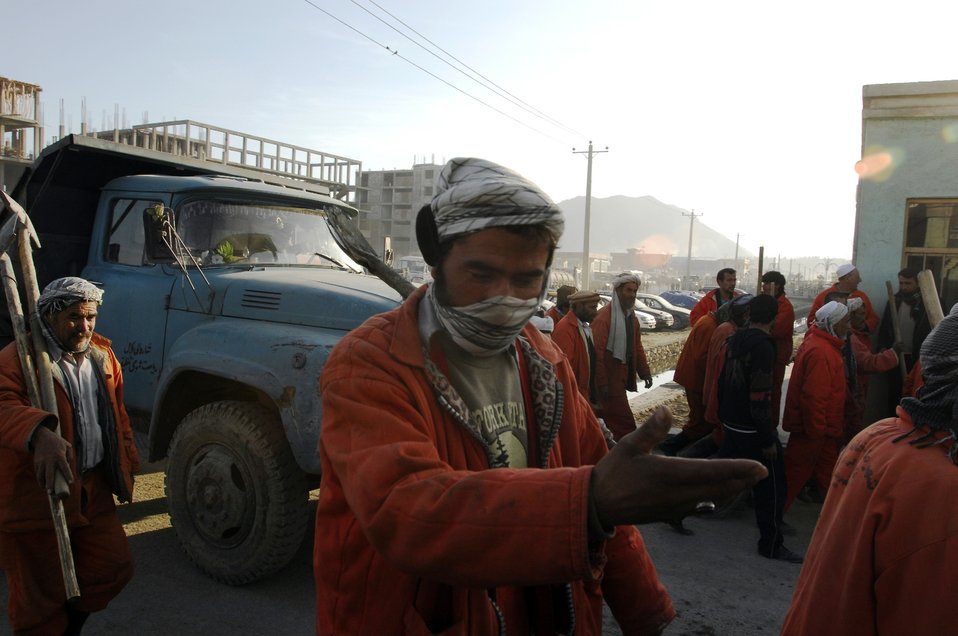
Care61